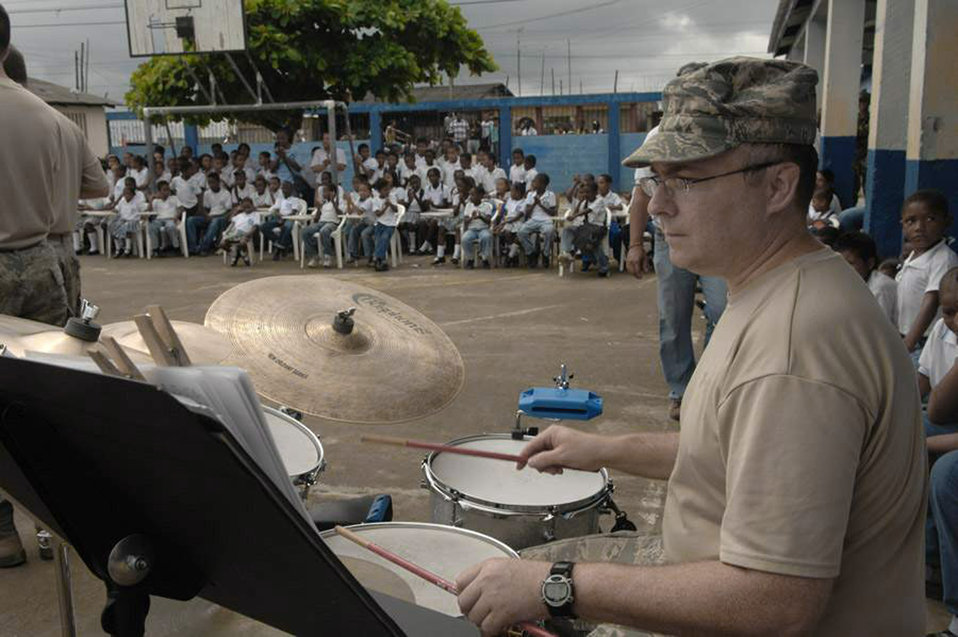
Photo essay: Show and care

Air Force South Band members perform for students at the Cuidadela Mixtra Escuela as part of Continuing Promise 2009 June 10 at Tumaco, Colombia. The humanitarian mission combines U.S. military and interagency personnel, nongovernmental organizations, civil service mariners, academics and partner nations to provide medical, dental, veterinary and engineering services afloat and ashore alongside host nation personnel. The band members are deployed with the Military Sealift Command on the hospital ship USNS Comfort.